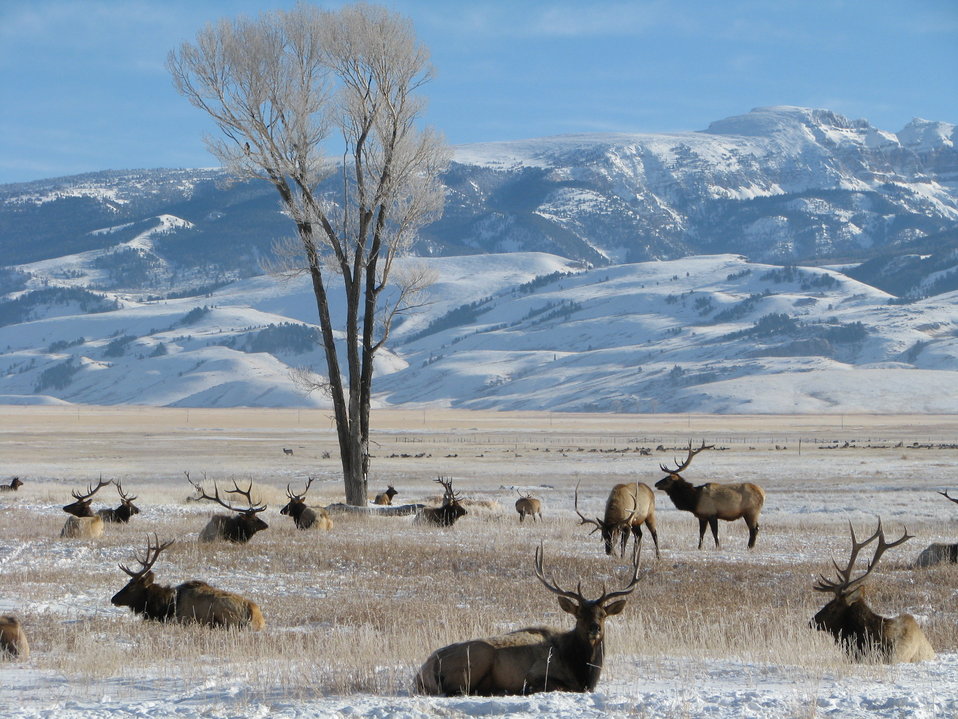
A Classic View

This view from Highway 89 is a common winter site on the refuge. The lone cottonwood tree is called the Winegar Tree, named after a family that homesteaded in that location. The tree sits alongside Flat Creek.